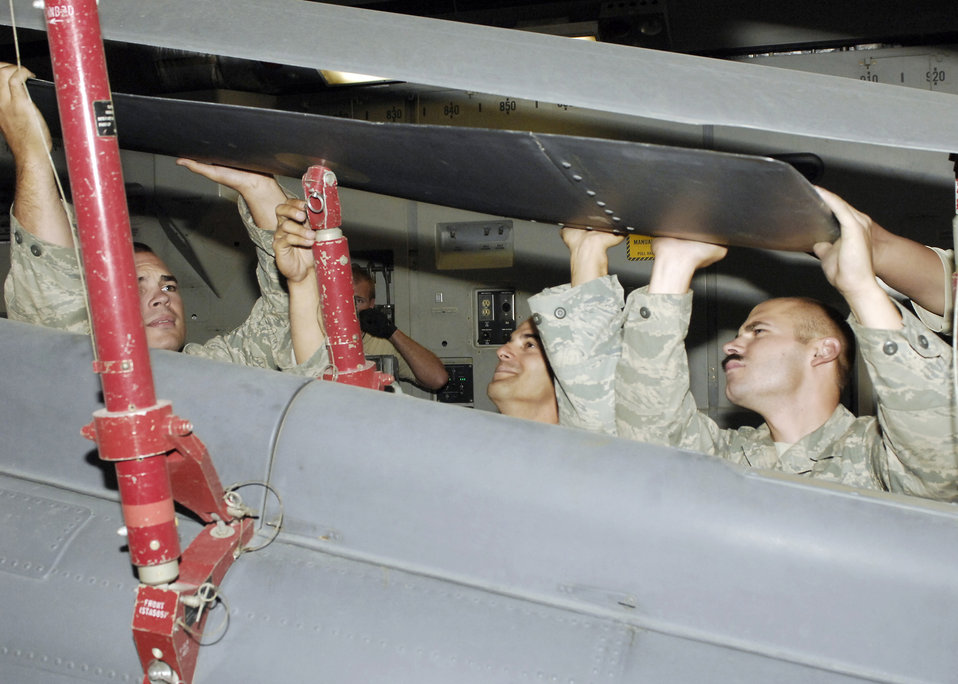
Flying a hawk home

Senior Airman Josh Berge (left to right), Staff Sgt. Elias Carlon and Senior Airman Anthony Boone work together to ensure a HH-60G Pave Hawk doesn't sustain any damage by securing the rotors Sept. 9, 2009, at Bagram Airfield, Afghanistan. The Pave Hawk is loaded onto a C-17 Globemaster III for its return to home station. All three Airmen are from the 455th Expeditionary Aircraft Maintenance Squadron and deployed from Royal Air Force Lakenheath, England.